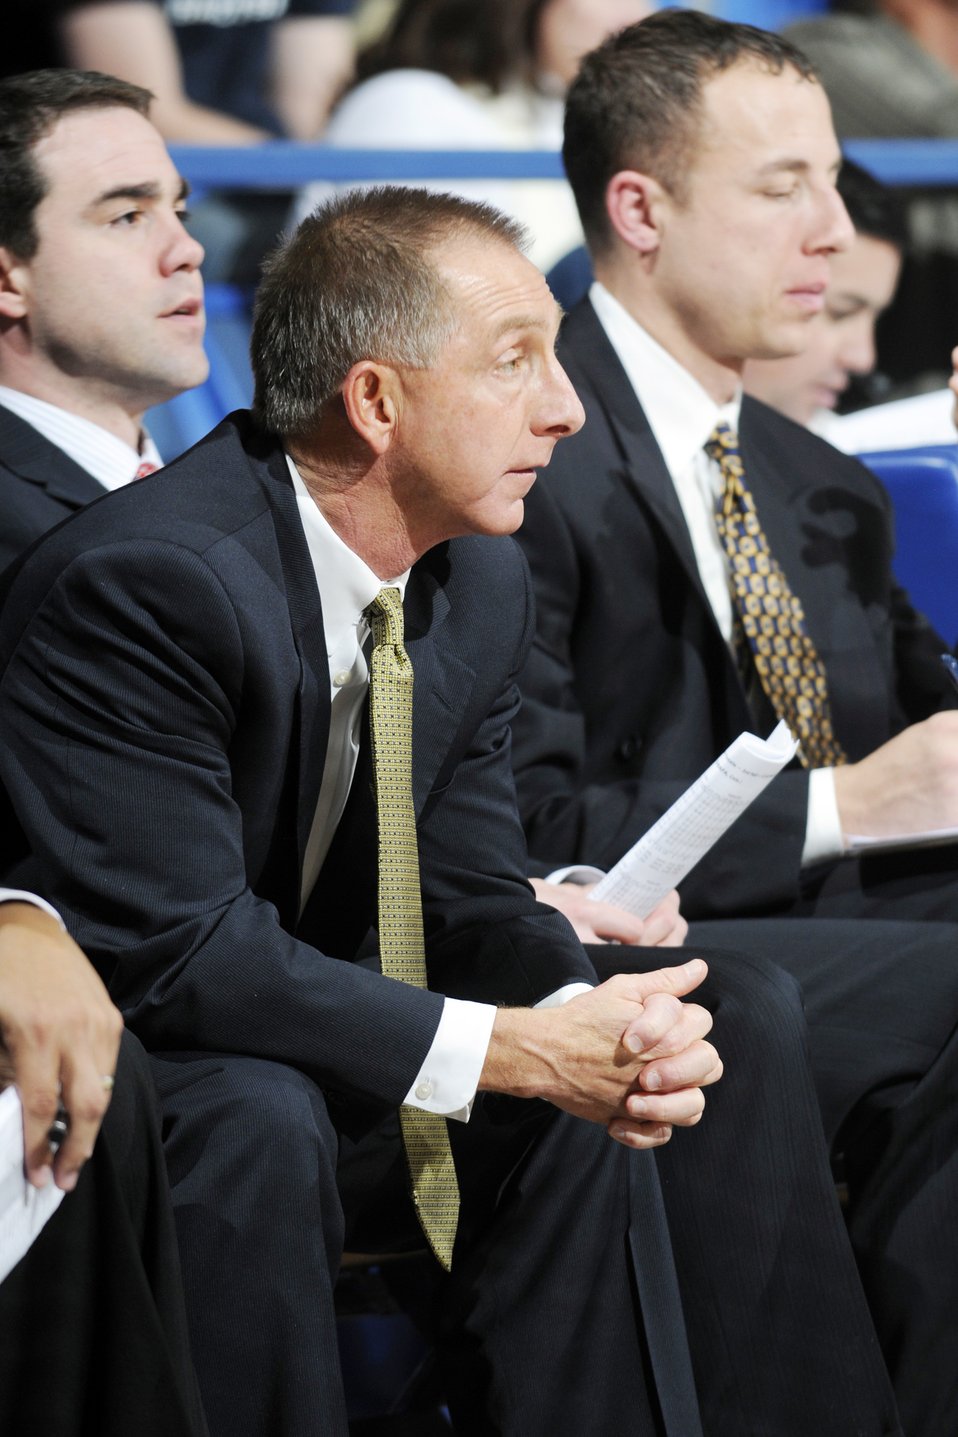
Falcons won 95-77

U.S. Air Force Academy, CO- Falcons head coach Jeff Reynolds during the Falcons game against Dickinson State during the Reggie Minton Air Force Classic at Clune Arena Nov 20. The Falcons won 95-77, but finished the tournament in 2nd place after a 70-46 loss to Northern Colorado in the championship game.